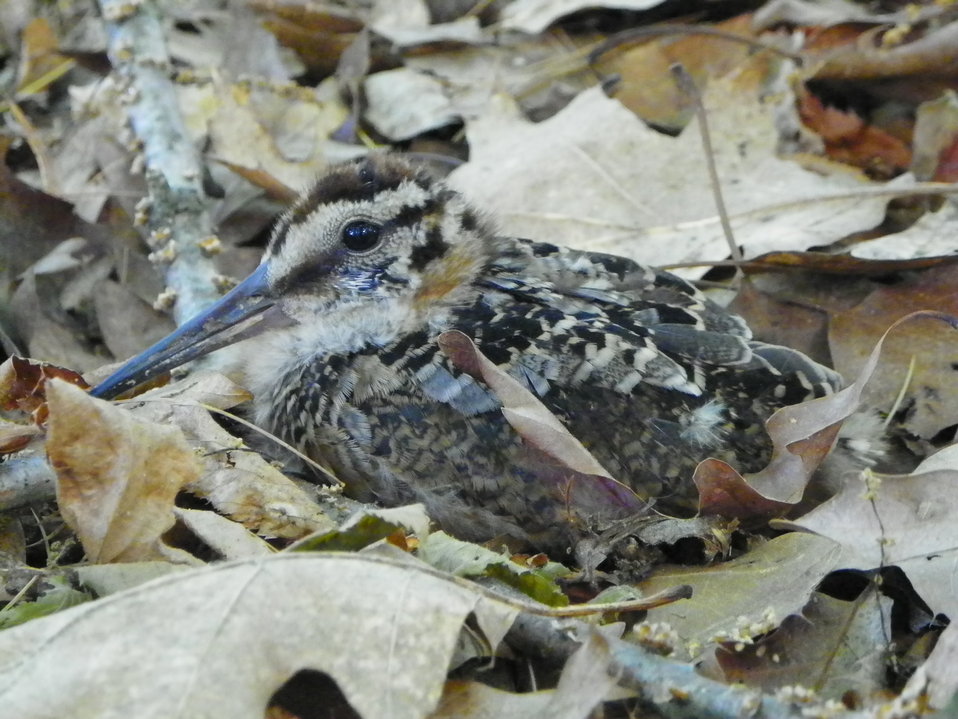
Woodcock on Nest at Rachel Carson National Wildlife Refuge

Credit: Carlos Guindon/USFWS Contractor

www.fws.gov/refuge/rachel carson/